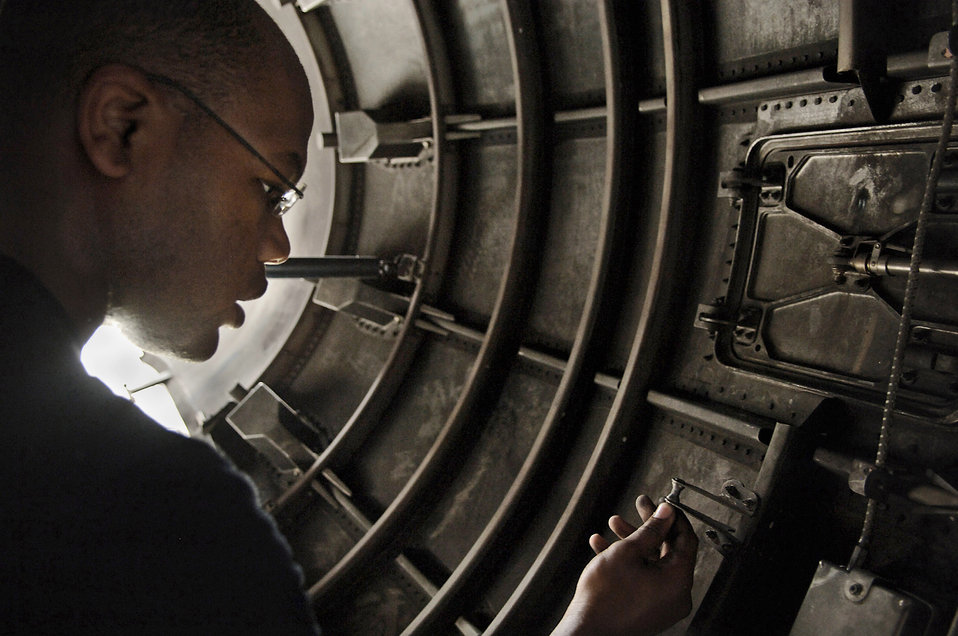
Everything checks

Airman 1st Class Reginold Camp conducts an inspection on the engine of a C-17 Globemaster III Aug. 9 at Charleston Air Force Base, S.C.